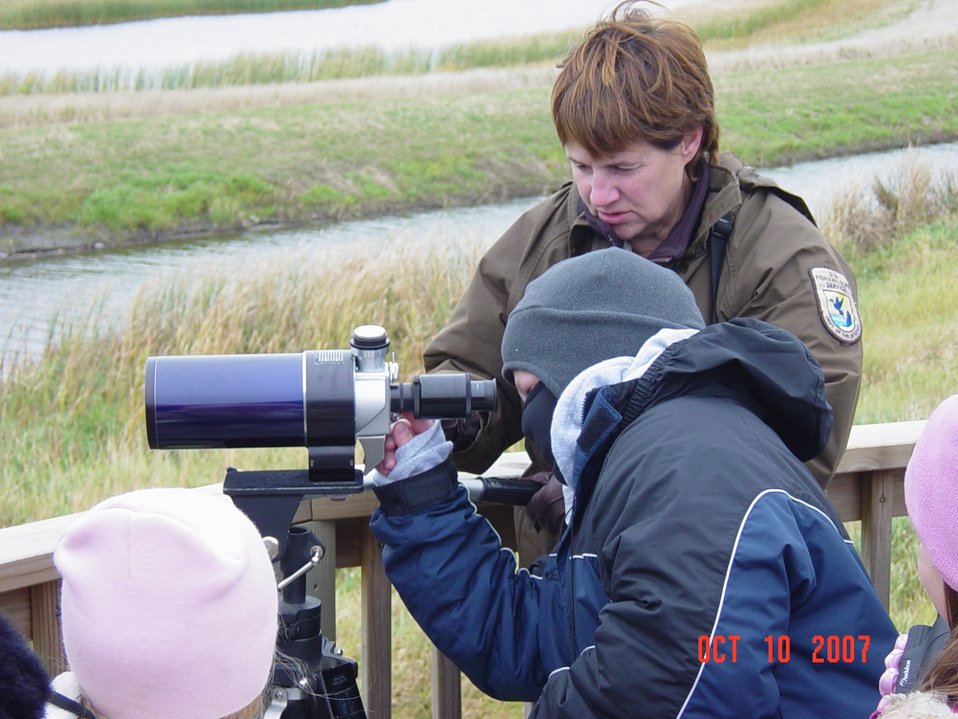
Arrowwood National Wildlife Refuge

Arrowwood NWR Biologist Scherr assists a bird watching student during National Wildlife Refuge Week.